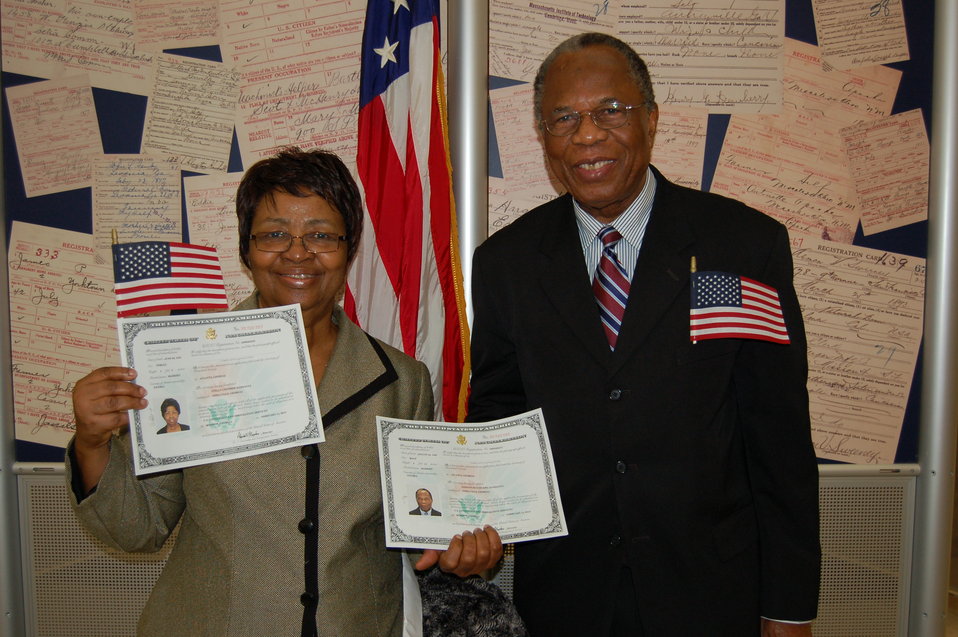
New Citizens